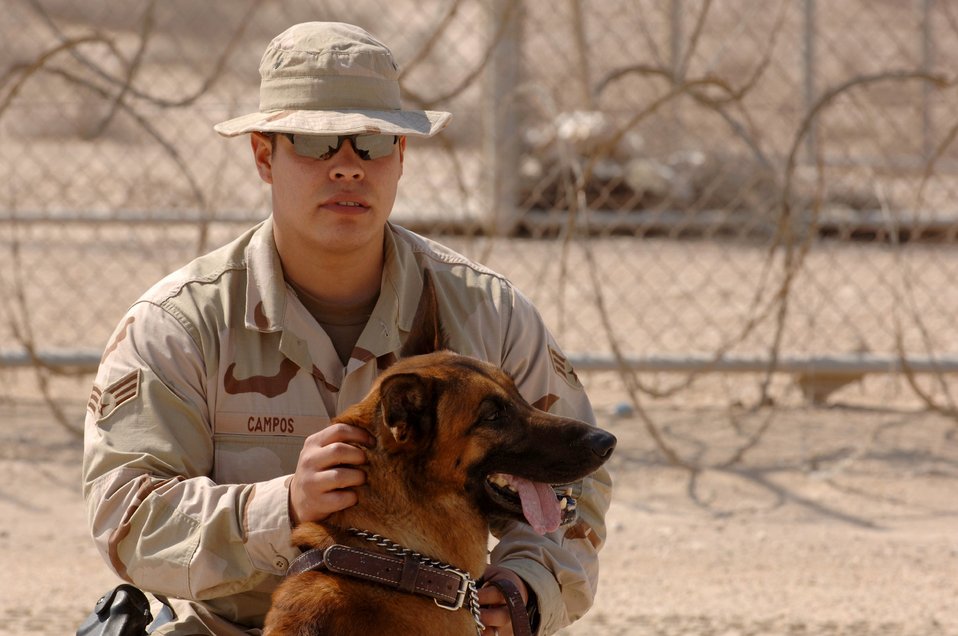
Partners in the desert

SOUTHWEST ASIA (AFPN) -- Senior Airman Martin Campos pets his military working dog, Rico, at a deployed location Feb. 24. Airman Campos and Rico, a Belgian Malinois, are with the 379th Expeditionary Security Forces Squadron.